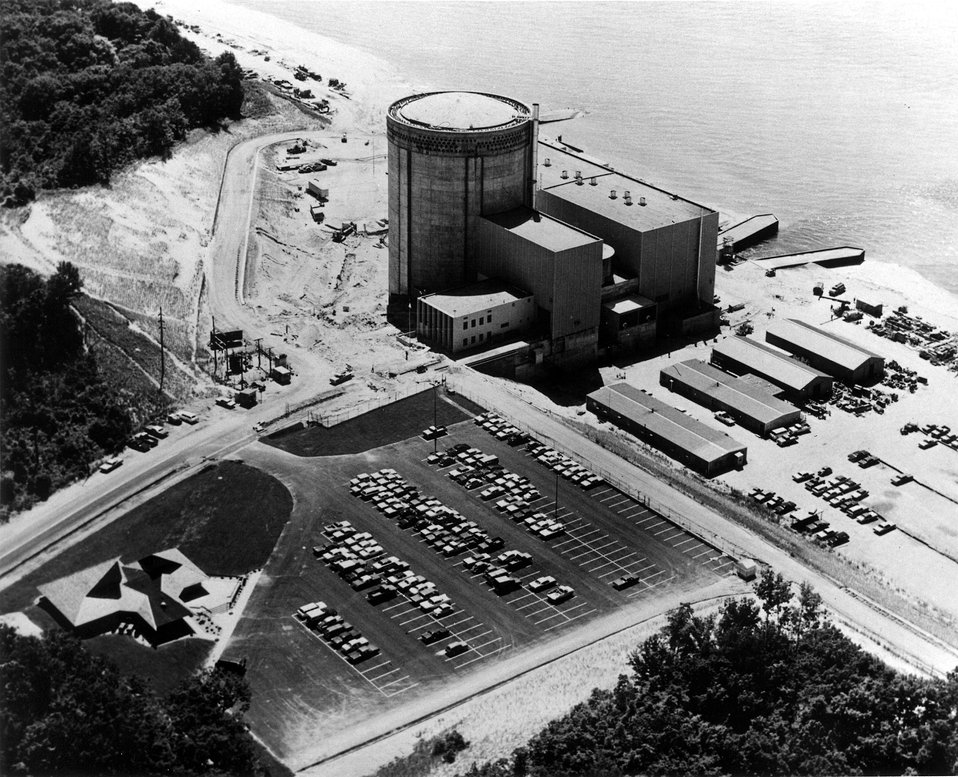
With beat supplied by a pressurized water nuclear reactor, the Palisades Nuclear Power Station can generate 700,000 kilowatts of electricity. Circa 1971.